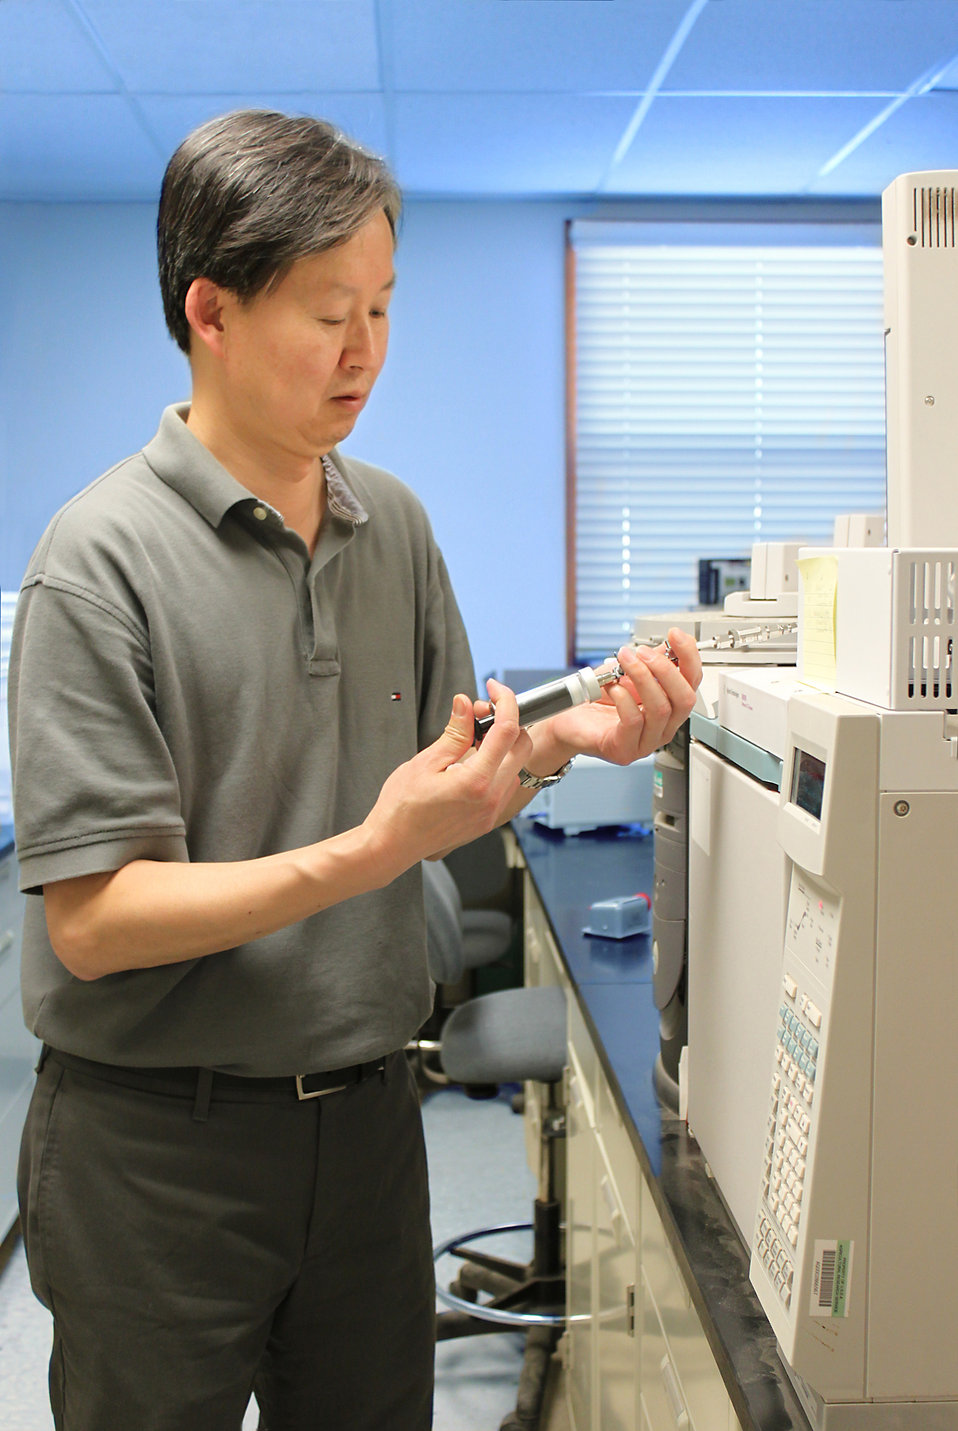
U.S. Department of Agriculture (USDA) Agricultural Research Service (ARS) entomologist Yong-Biao Liu injects fumigant samples into a gas chromatograph to determine phosphine concentrations at the Crop Improvement and Protection Research Unit in Salinas, CA on Aug. 19, 2012.